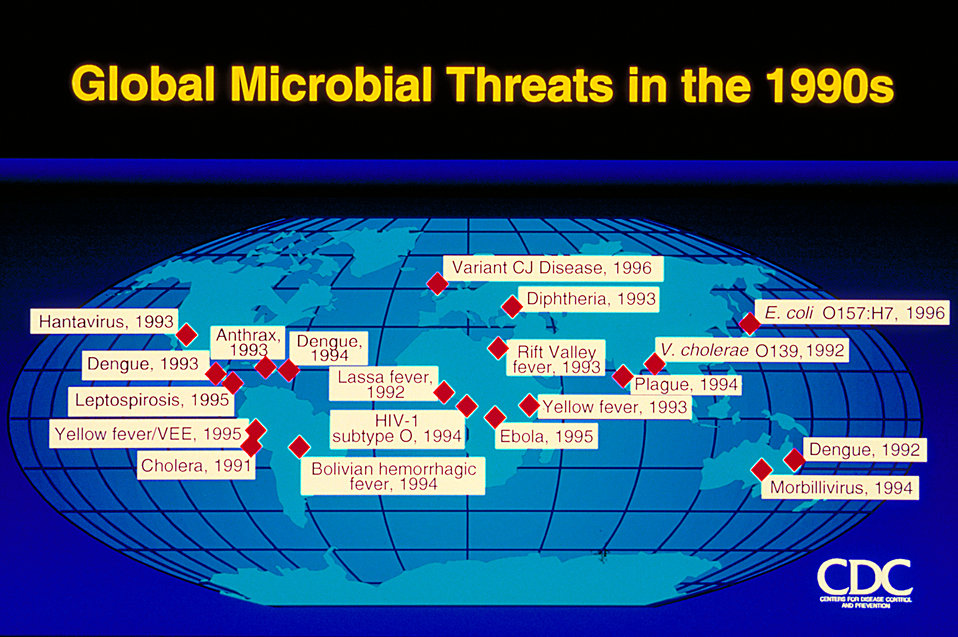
Global Microbial Threats in the 1990s (map).